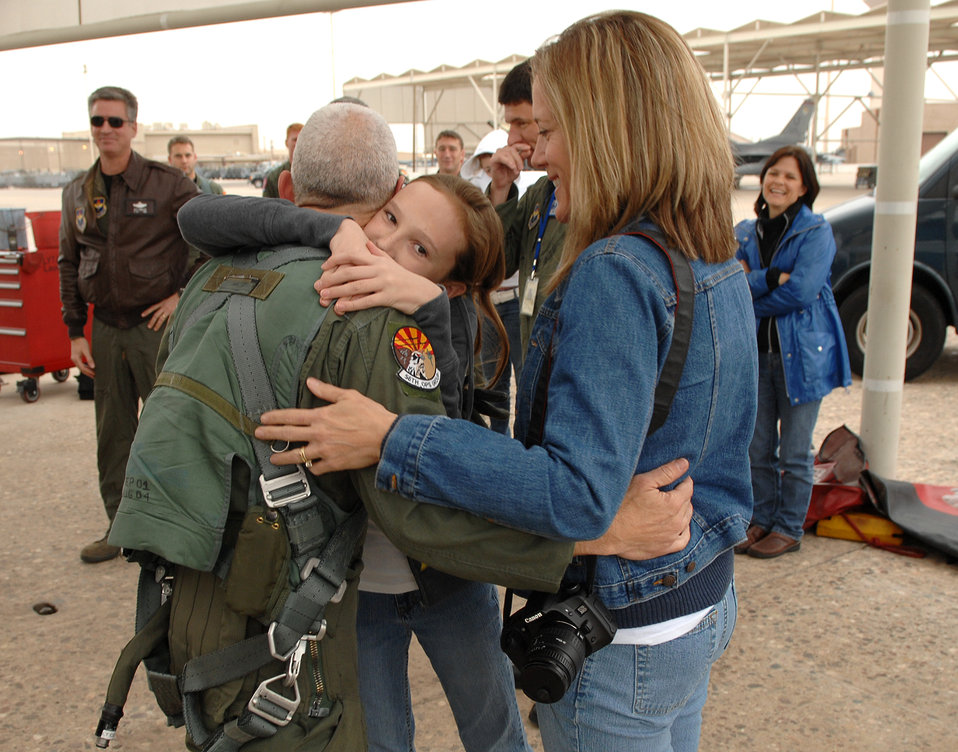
Luke pilot reaches F-16 milestone

Col. David Lujan, 56th Operations Group deputy commander, is greeted by his wife and daughter on the flightline at Luke Air Force Base, Ariz., Dec. 22 after completing his 4,000th hour in the F-16 Fighting Falcon. He is the 17th pilot to reach this milestone.